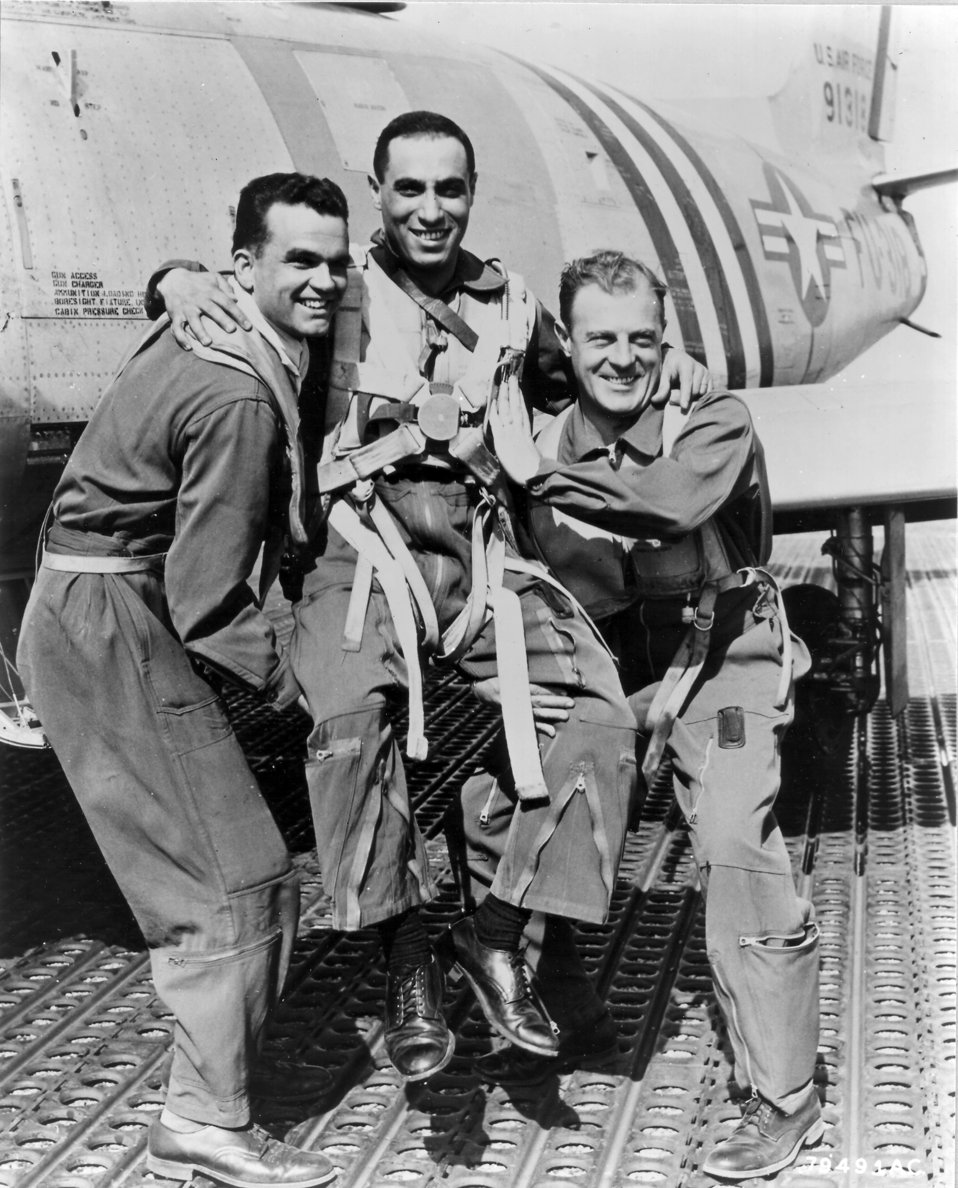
Jabara being hoisted

1940's -- Jabara being hoisted